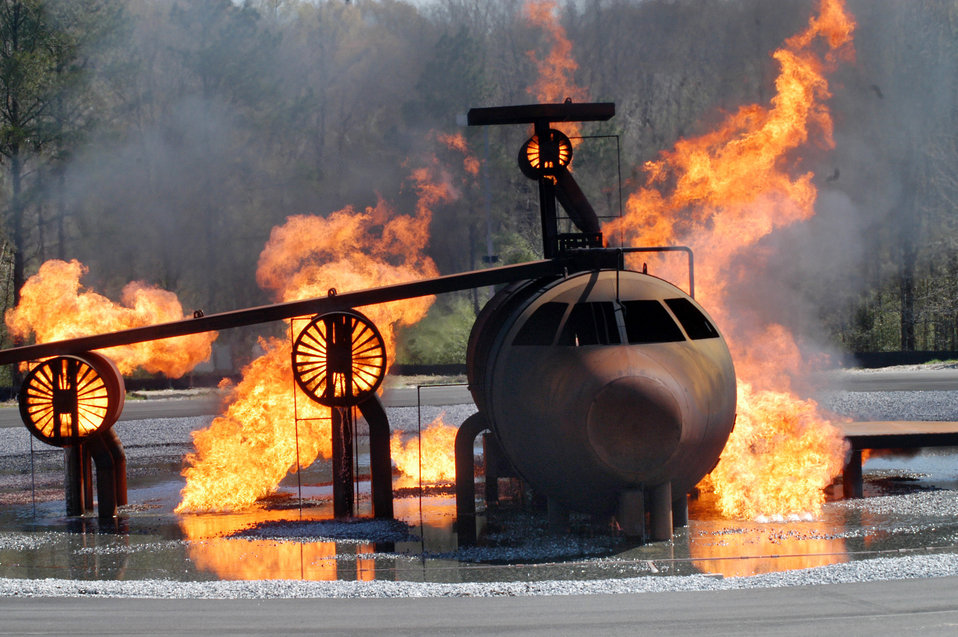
Fire pit

ROBINS AIR FORCE BASE, Ga. -- The aircraft fire-training facility here is now fueled by propane which is environmentally friendly. The new fire pit allows firefighters to train for more than one type of incident and to practice fighting wing fires, engine fires and auxiliary power-unit fires. It is equipped with five igniters and burners, allowing firefighters to train in 15 different scenarios.